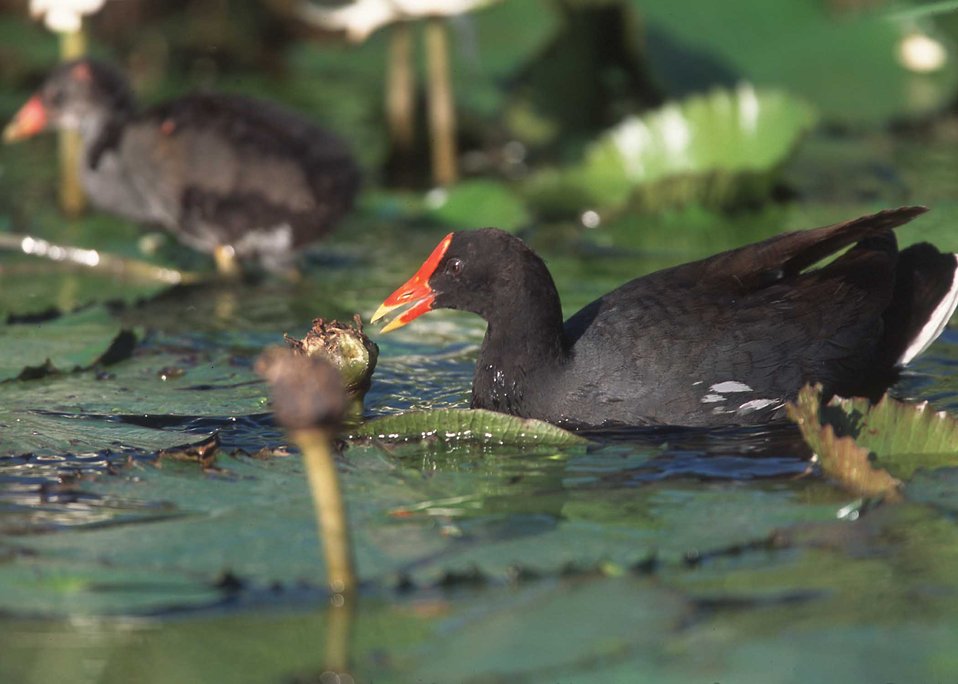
Hawaiin Common Moorhen in Hawaii.